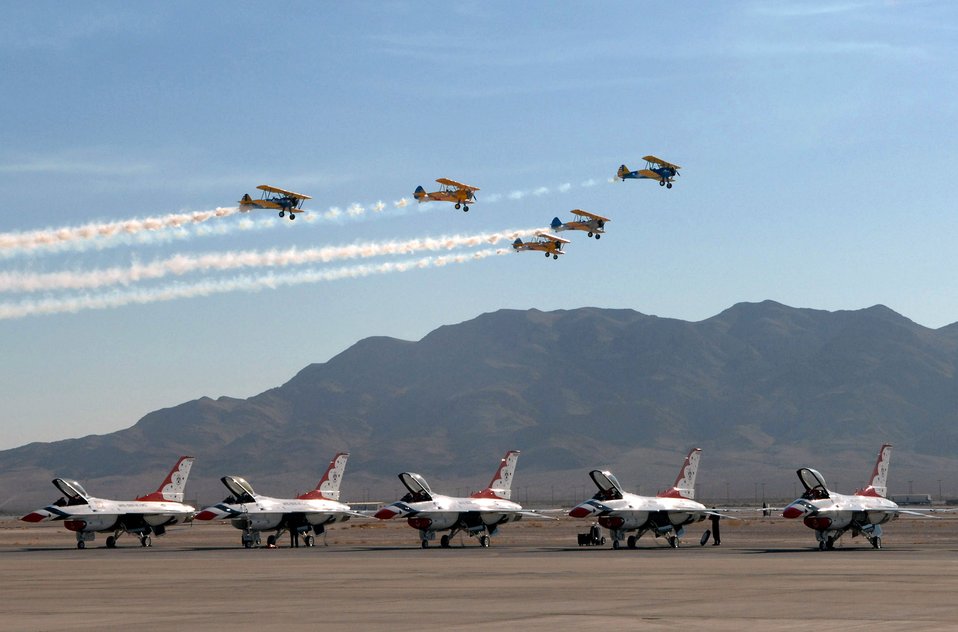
It's an aviation nation

A World War I era five-ship formation performs a fly-by during Aviation Nation Air Show Nov. 10 at Nellis Air Force Base, Nev. Aviation Nation is one of the largest air shows in North America. This year's show commemorated 60 years of airpower and was the capstone event of the Air Force's yearlong 60th anniversary celebration.